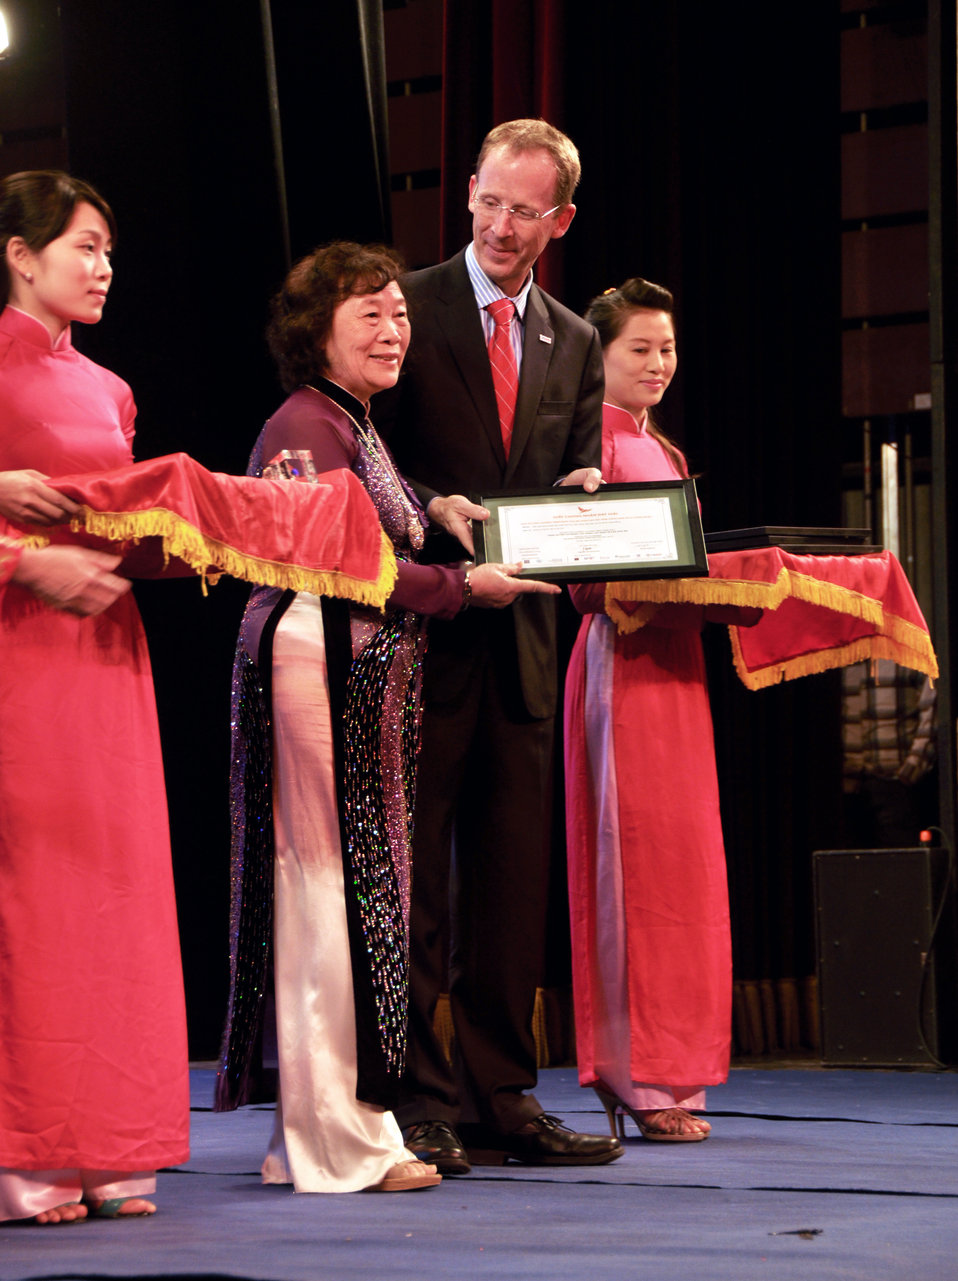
Vietnam Women Innovation Day 2013

USAID Mission Director Joakim Parker awards prizes to winning innovative proposals.

Hanoi, October 2, 2013.